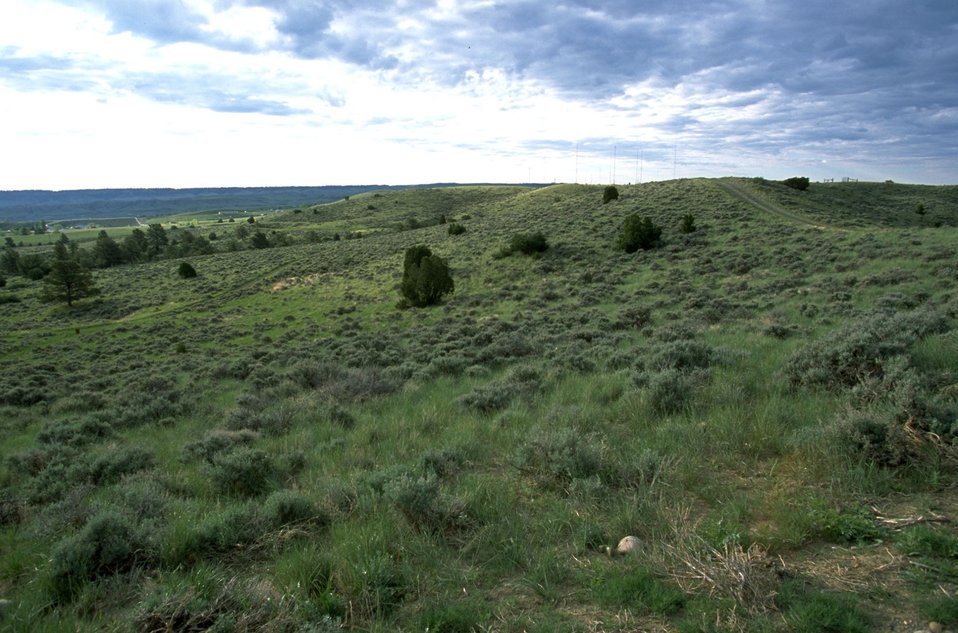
Grassland and sagebrush in the Four Dances Natural Area